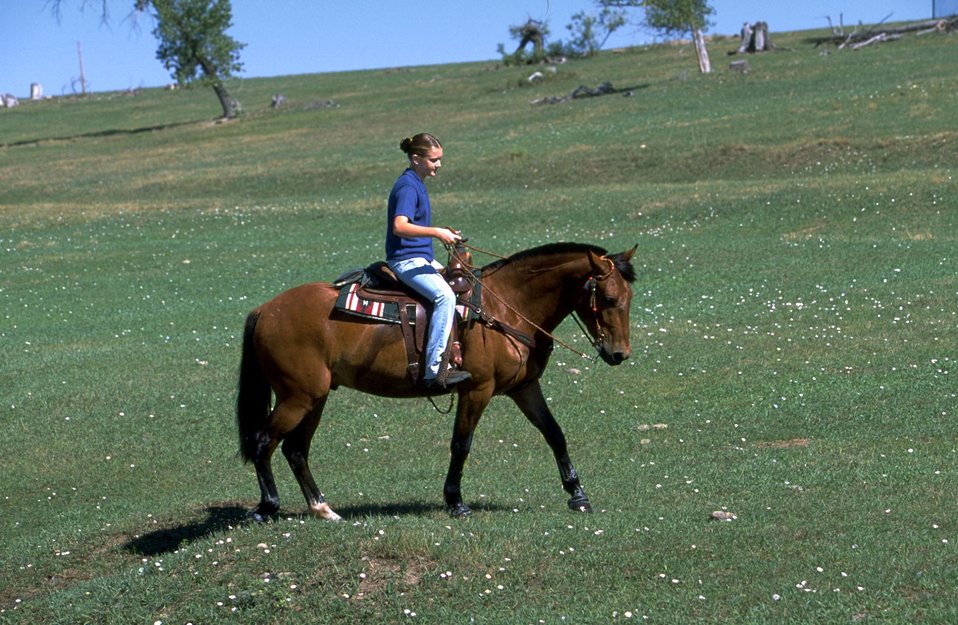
Adopted Horse